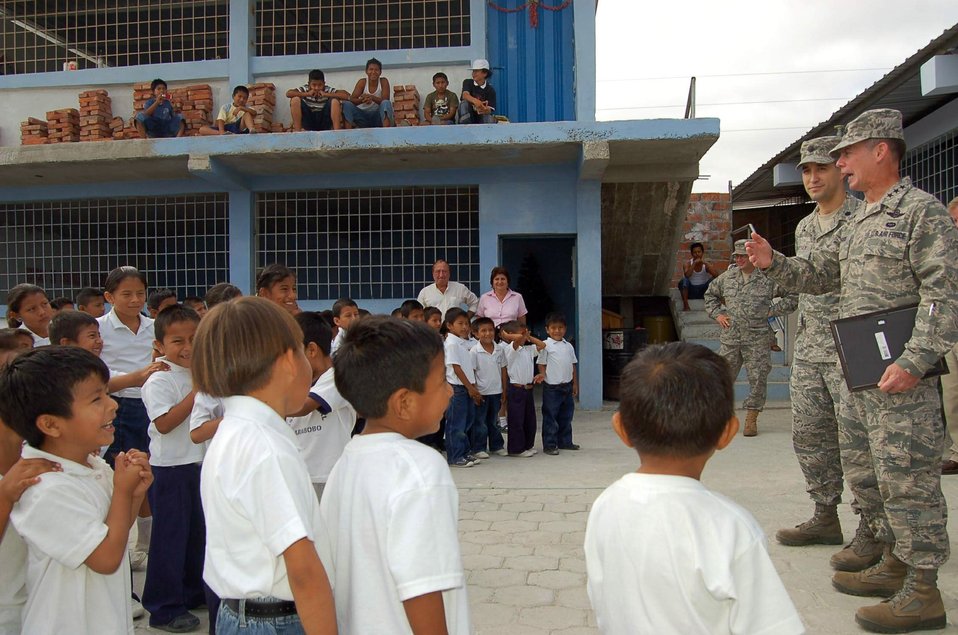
Airmen visit school in Ecuador, donate supplies

Lt. Gen. Glenn F. Spears (right) and Lt. Col. David Keesey present a gift of $6,000 in school supplies from the Southern Command's Humanitarian Assistance Program to children Dec. 10 at the San Juan Elementary School in Ecuador. The donation was part of a weeklong holiday tour to engage with forward deployed personnel and assist nearby communities in seven Latin American countries during the holiday season. General Spears is the Southern Command deputy commander and Colonel Keesey is his executive and translator on the trip.